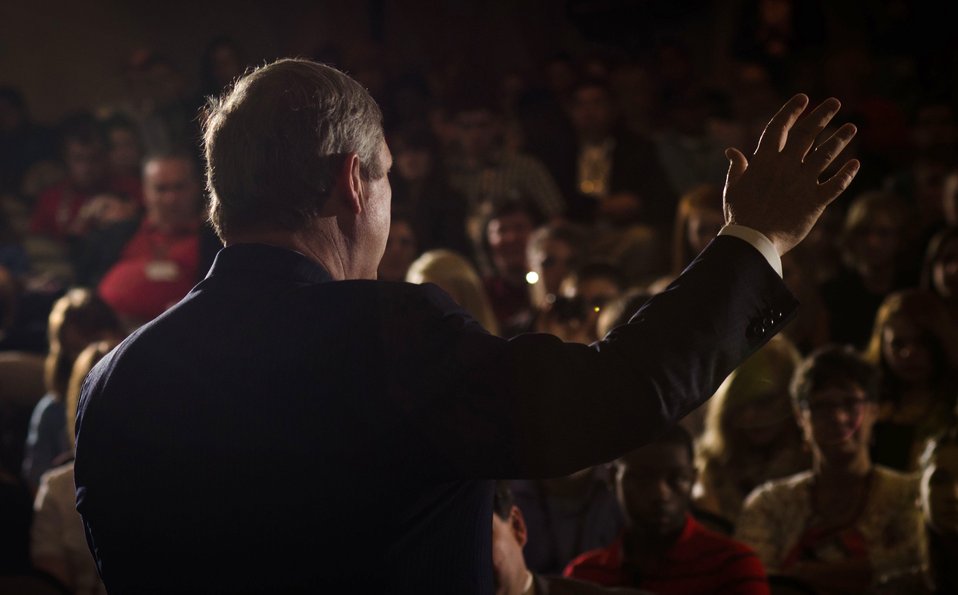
Agriculture Secretary Tom Vilsack speaks with 4-H members at the National 4-H Youth Center in Chevy Chase, MD, on Monday, March 26, 2012. 'For almost 100 years, USDA and 4-H have partnered to produce some of our nation's best and brightest, including farmers and ranchers who have supported the American economy and put food on our tables,' Vilsack said. 'You all are tomorrow's leaders. We need you to think big, innovate and help tackle the important challenges standing between us, a stronger middle class and a stronger nation.'